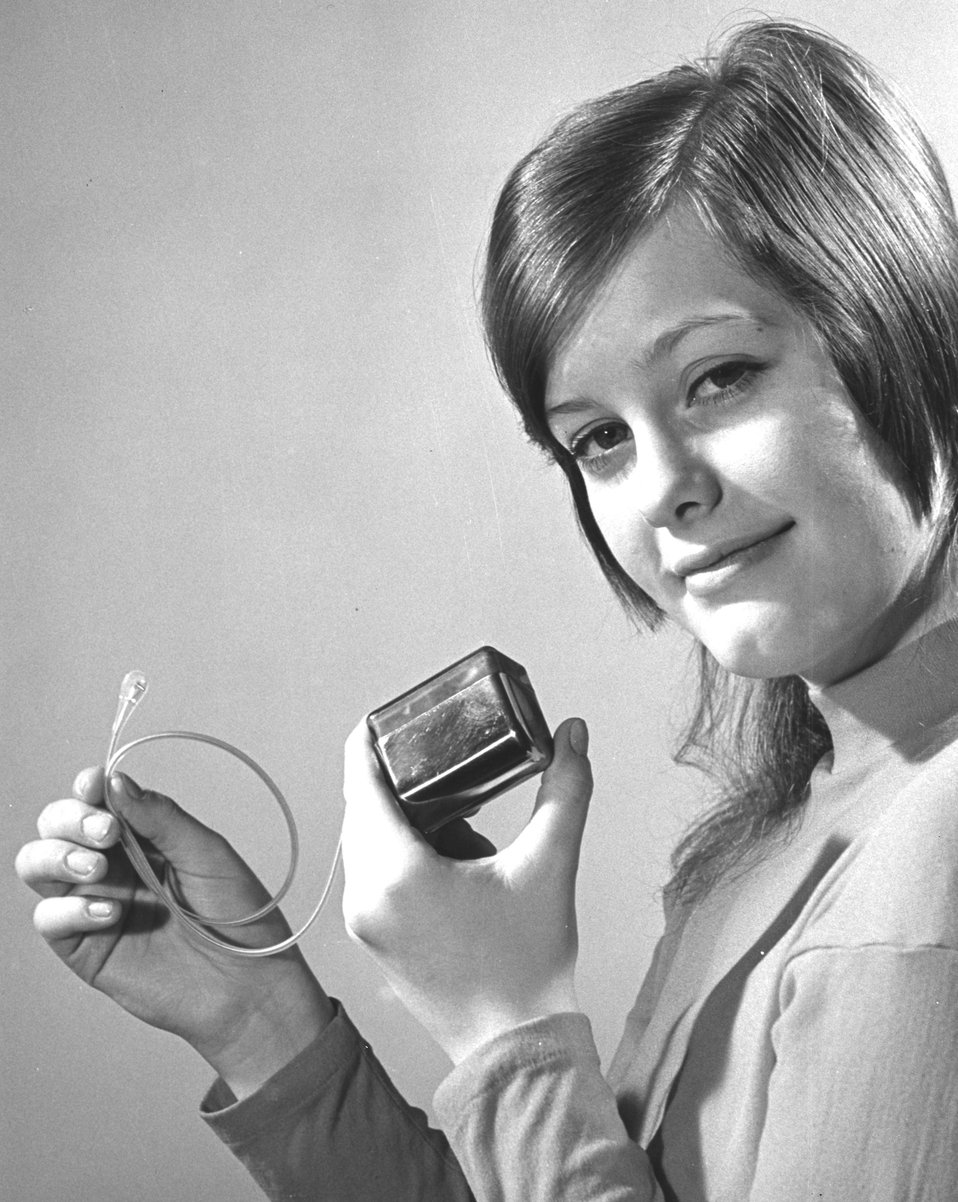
Gayle Hood displays model of nuclear-powered heart pacemaker developed for the Atomic Energy Commission by ARCO Nuclear Company, a subsidy of Atlantic Richfield Company. Circa 1973.